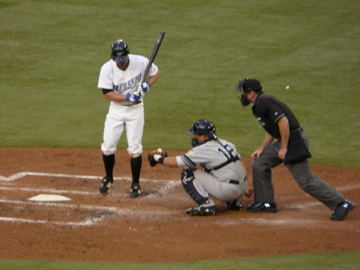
Joe Inglett
19:17, 6 September 2008 . . DinoZon . . 360×270 (45 KB)